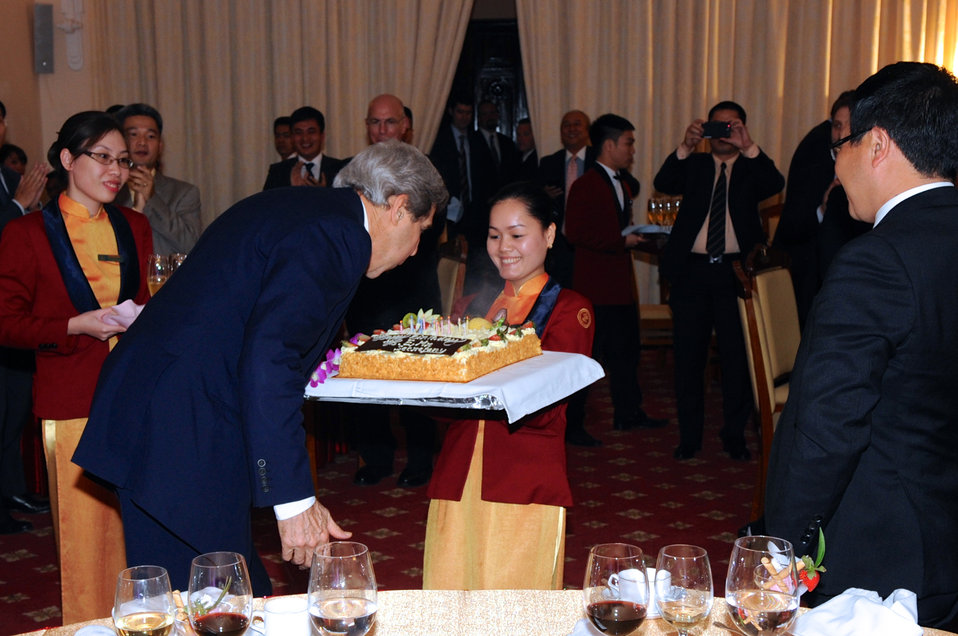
Secretary Kerry Receives a Surprise Birthday Cake in Vietnam

U.S. Secretary of State John Kerry is surprised with a birthday cake at the end of a dinner hosted by Vietnamese Foreign Minister Pham Binh Minh in Hanoi, Vietnam, on December 16, 2013. The Secretary turned 70 on December 11, 2013.